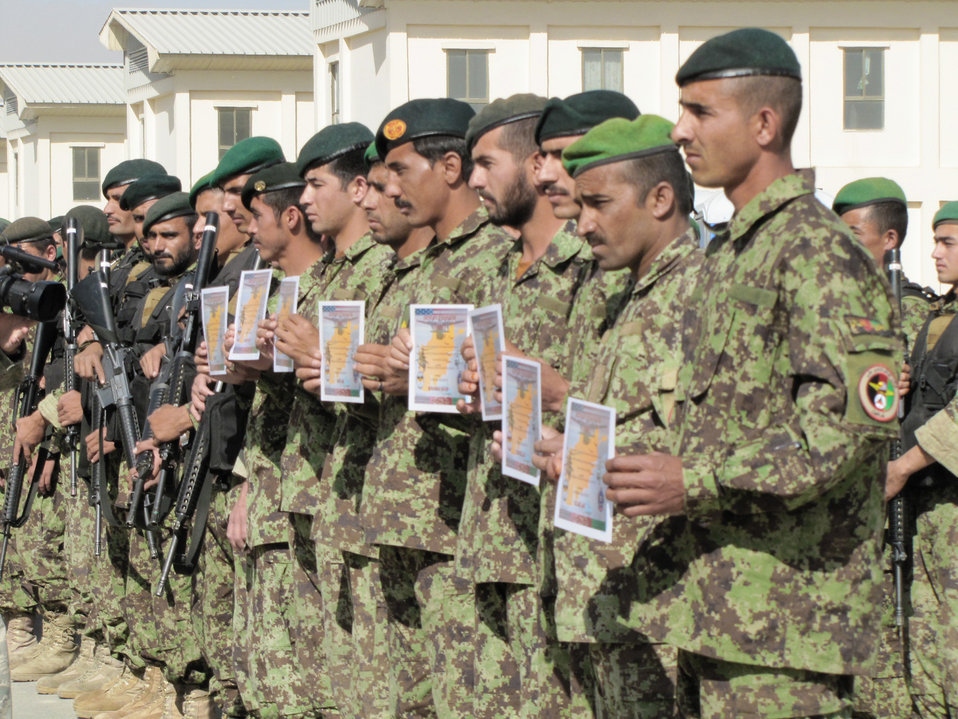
Afghan air force members attend fly-away security team training

Afghan air force security forces members graduate from fly away training on Oct 4, 2010, in Kabul, Afghanistan.